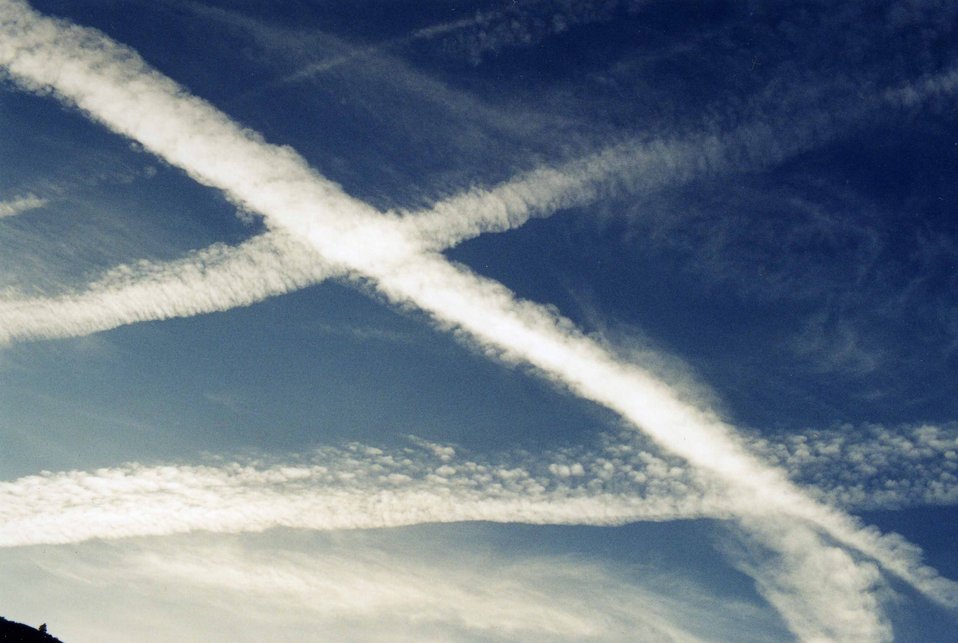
Uploaded by request of Mark Smith

Taken near Mammoth, California

Interesting symmetrical cloud formations